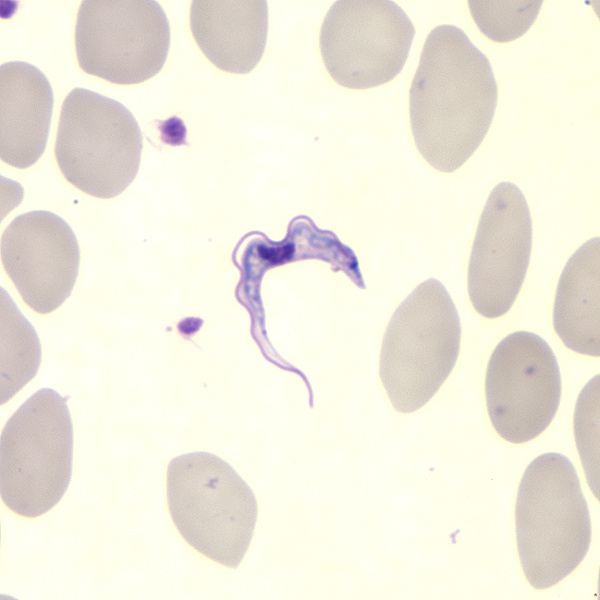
This Giemsa-stained light photomicrograph revealed the presence of a Trypanosoma brucei parasite, which was found in a blood smear.